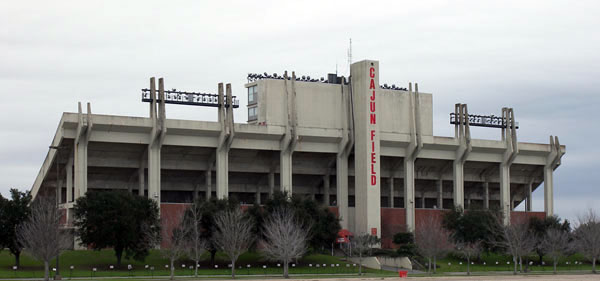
Photo of Cajun Field of the en:University of Louisiana at Lafayette taken by Aaron charles
en:Category:University of Louisiana at Lafayette images